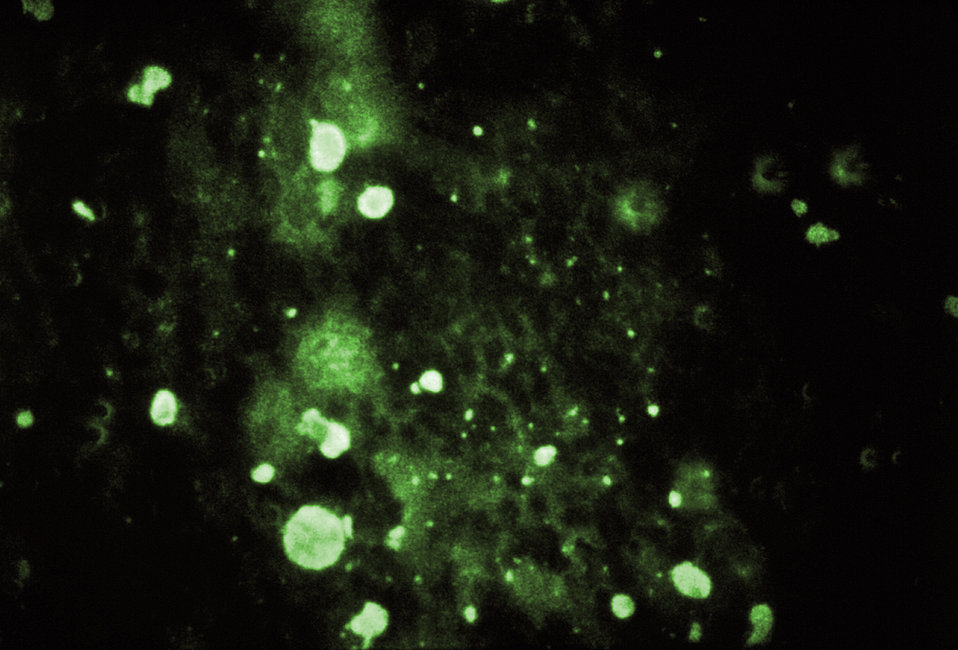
This immunofluorescent micrograph reveals a positive result for the presence of rabies virus antigens in this specimen.